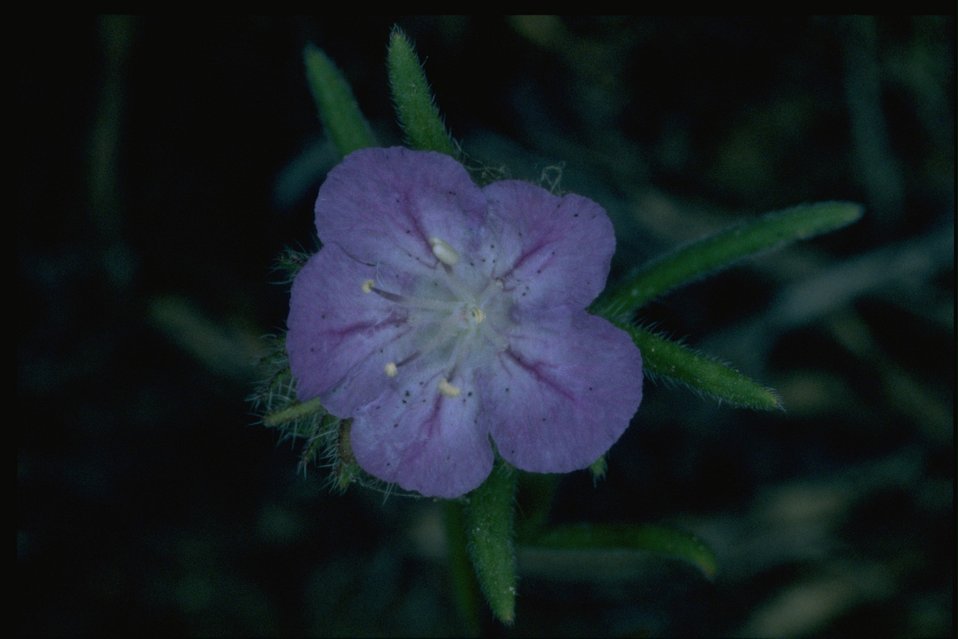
Closeup shot of Phacelia wildflower.